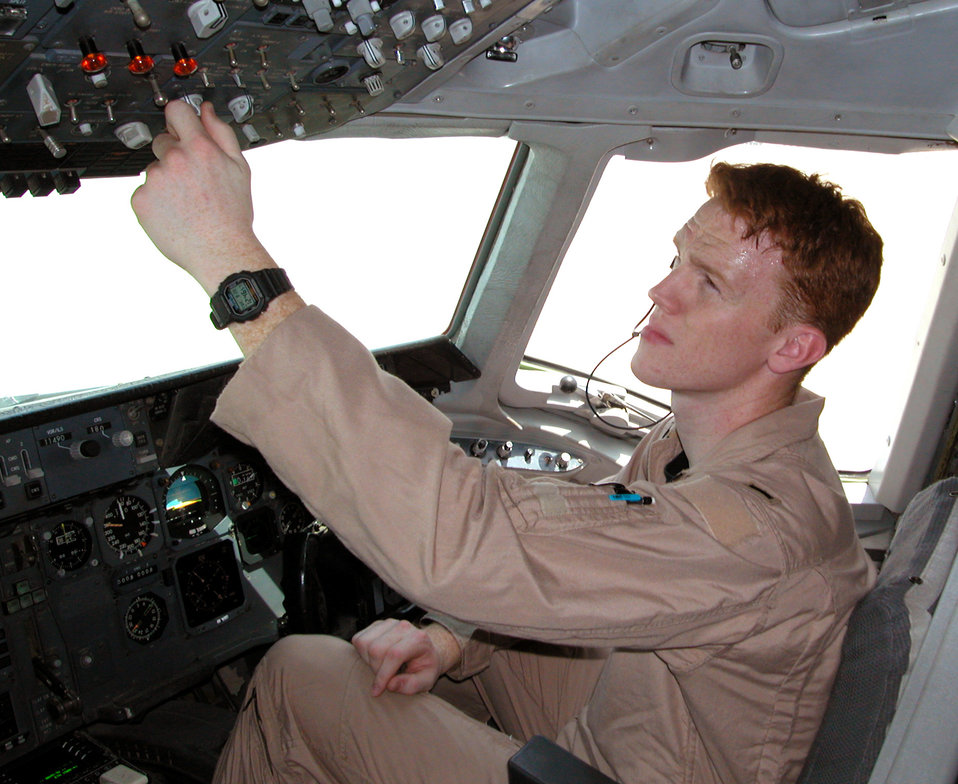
Huster

OPERATION IRAQI FREEDOM -- First Lt. Brian Huster goes through pre-flight checks on a KC-10A Extender at a forward-deployed location in Southwest Asia. Huster is a co-pilot with the 380th Air Expeditionary Wing deployed from McGuire Air Force Base, N.J.